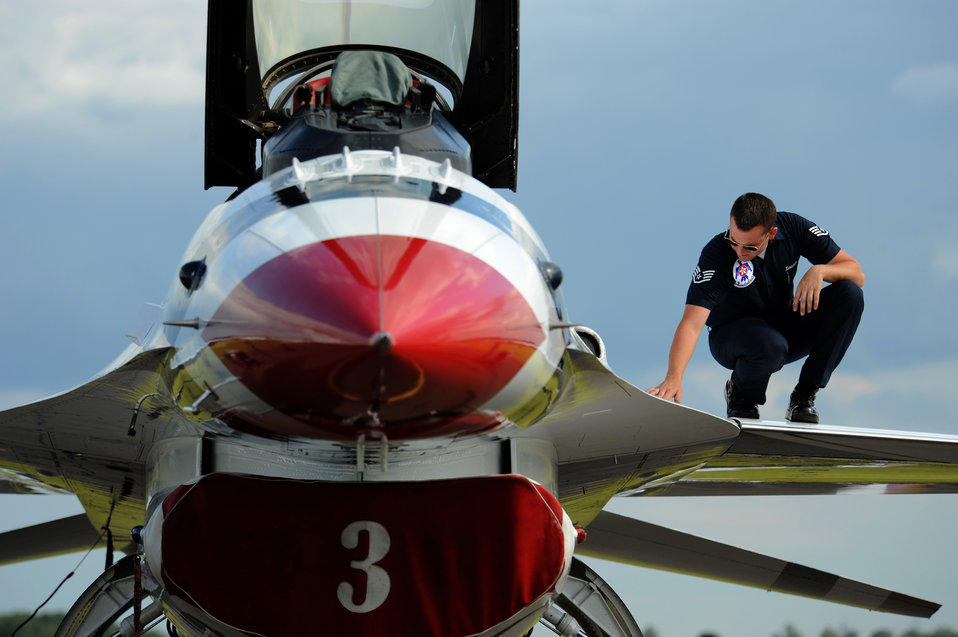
Wingman

Staff Sgt. Stephen Leonardi conducts post-flight maintenance on an F-16 Fighting Falcon June 30, 2011, at Royal Air Force Waddington, England. Leonardi is a Thunderbirds crew chief.